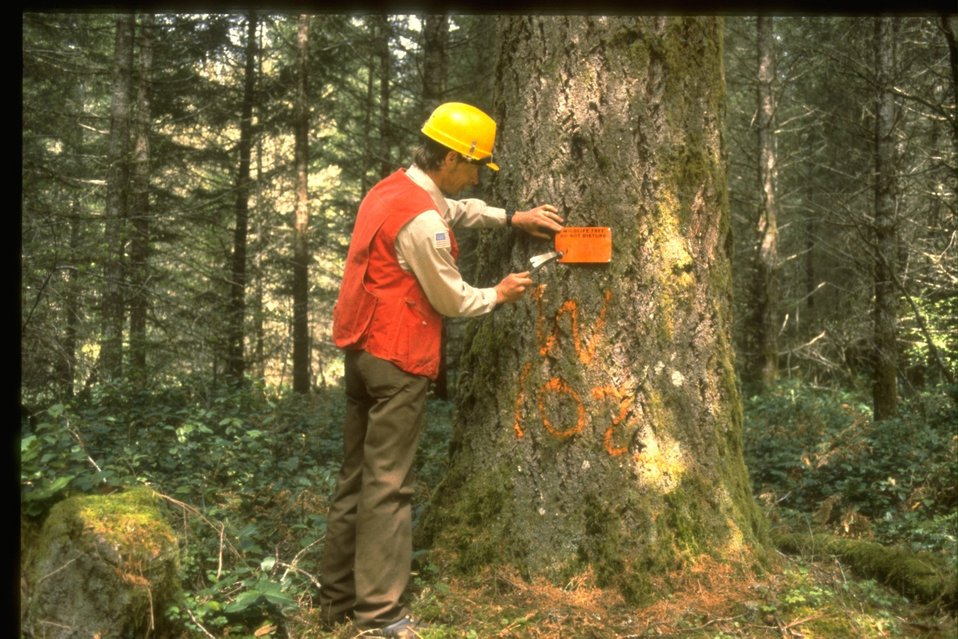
Biologist posts a sign on a tree.